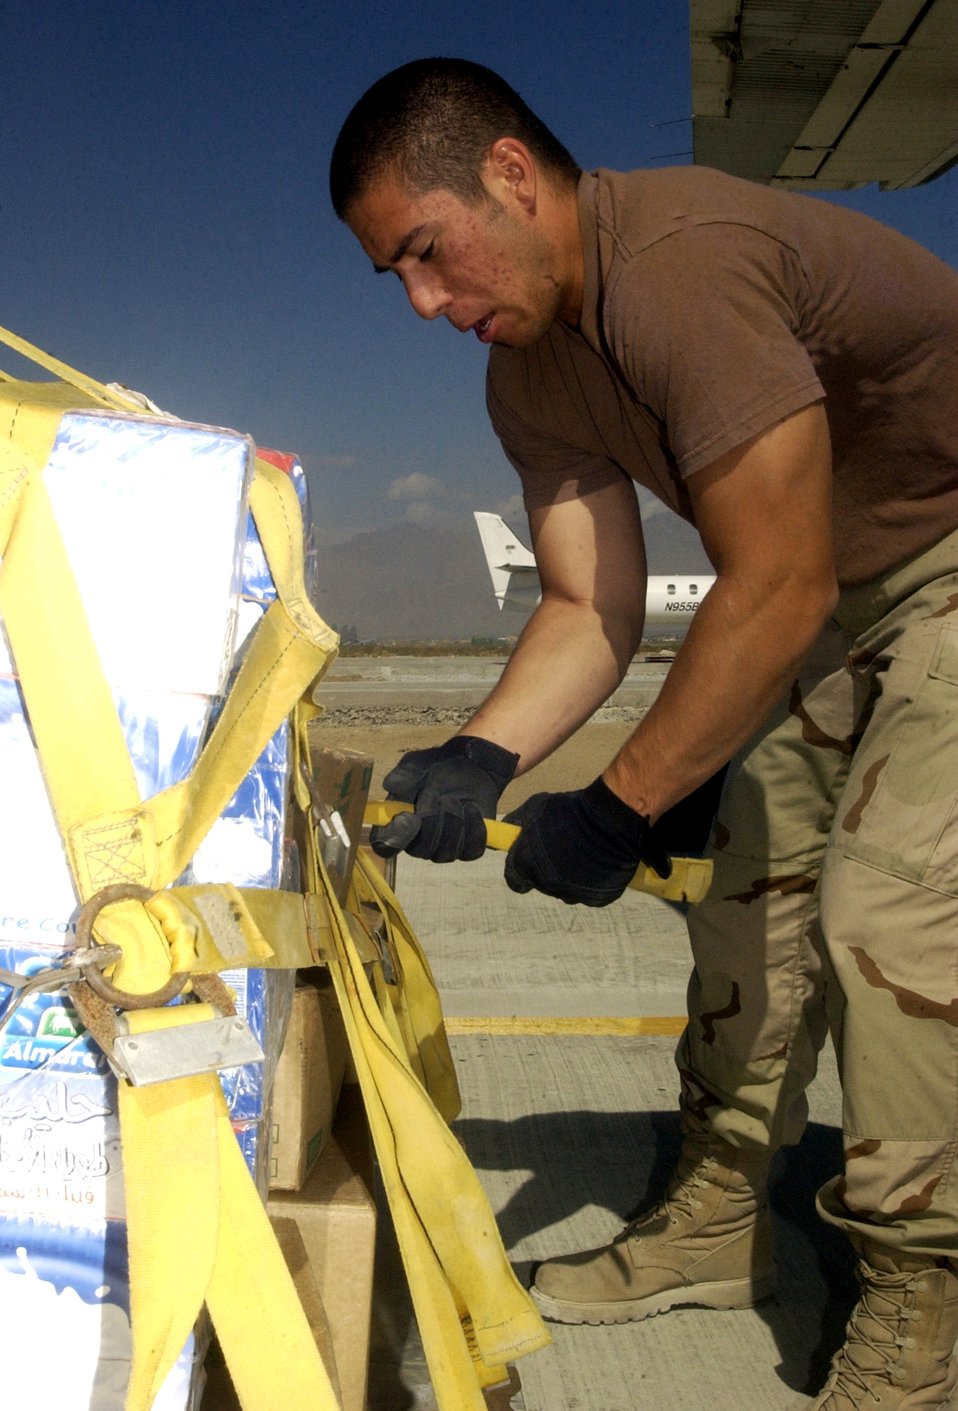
Loading up

BAGRAM AIR BASE, Afghanistan -- Airman 1st Class Gregory Viruet secures a pallet of cargo of earthquake relief supplies bound for Pakistan. The first relief supplies from the United States were ready for departure aboard a C-17 Globemaster III here less than 48 hours after the devastating earthquake left thousands dead and thousands more injured. More than 134,000 pounds of food, water, cots, medical supplies and American Red Cross items have been flown out of Bagram headed for Pakistan. Airman Viruet is a short takeoff and landing coordinator with the 455th Expeditionary Logistics Readiness Squadron. He is deployed from McChord Air Force Base, Wash.